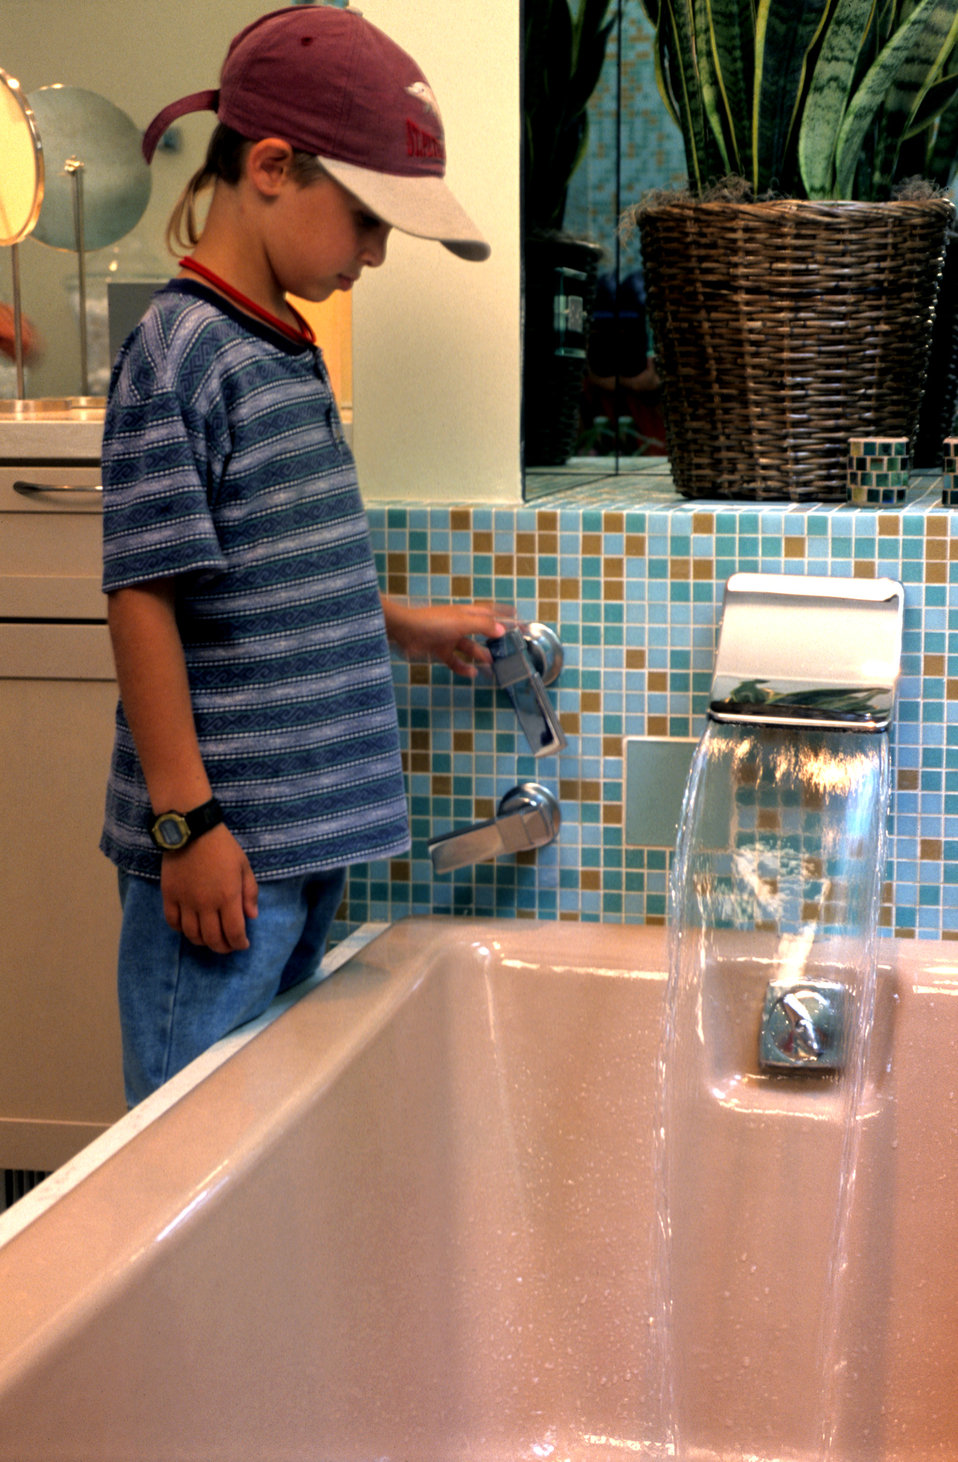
This was one of three images (PHIL# 9192 - 9194), depicting the usage of a bathtub's offset faucets. In this particular image, a child was depicted using the tub's offset mixing valve, thereby, adjusting the temperature of the flowing water. In images 9192 and 9193, both a child and an elderly woman were standing next to the tub using the faucet, which was installed closer to the outside of the tub. This faucet design enabled everyone to reach it more easily, including users who were standing, children, and the mobility-challenged, who were limited in their ability to bend and reach. This young boy was manipulating the mixing valve handle, thereby, adjusting the temperature of the flowing water.